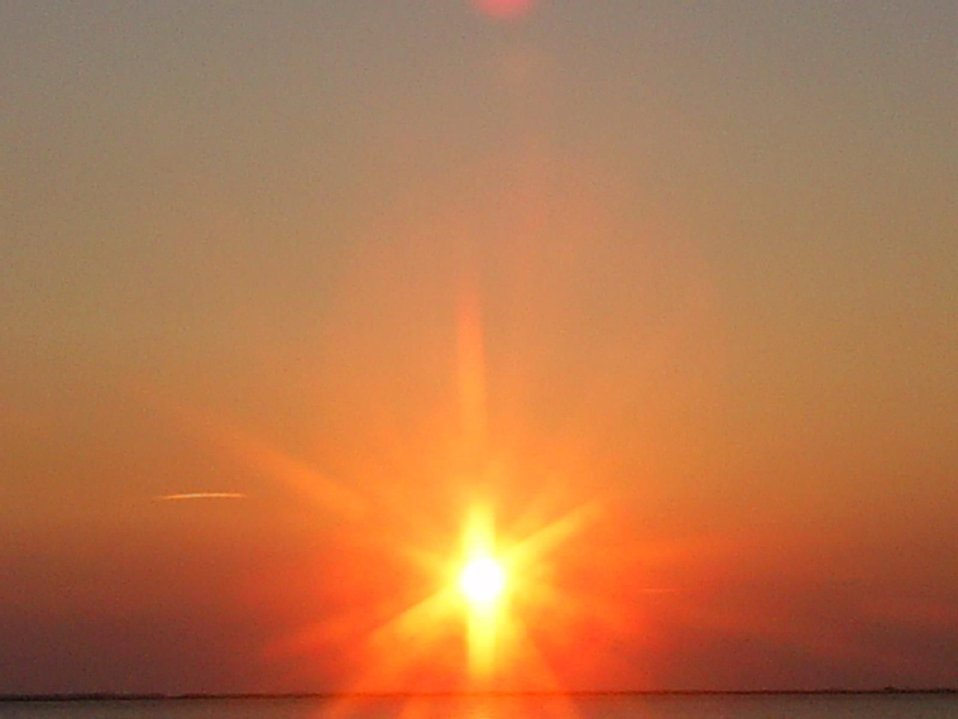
English:
Image title: A blurry sunset great for a background Image from Public domain images website, http://www.public-domain-image.com/full-image/nature-landscapes-public-domain-images-pictures/sunset-public-domain-images-pictures/a-blurry-sunset-great-for-a-background.jpg.html